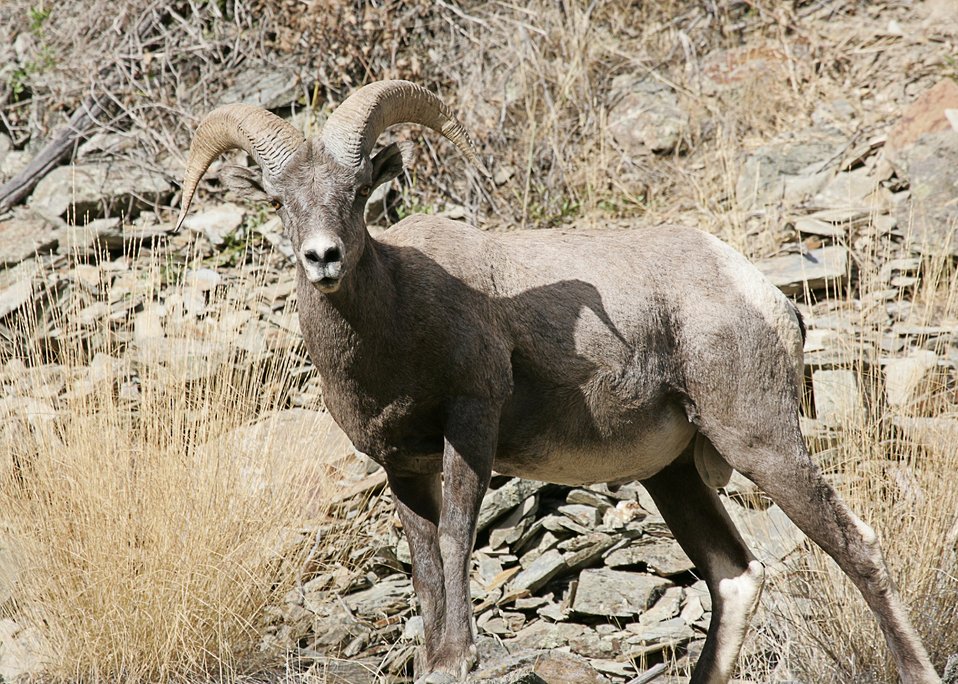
Bighorn sheep in the Connor Creek watershed in eastern Oregon.